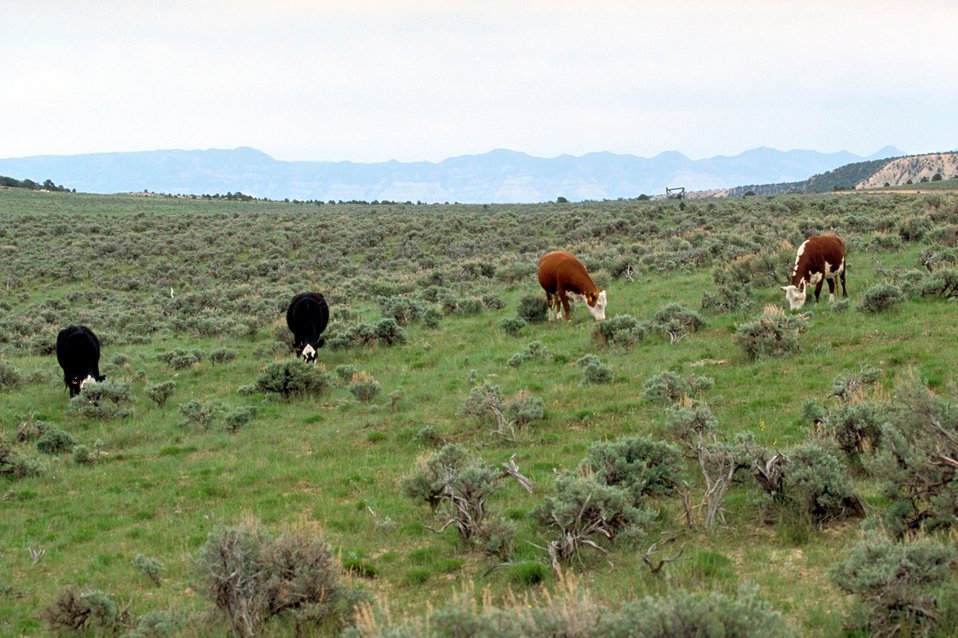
Livestock grazing on BLM lands near Price, Utah.